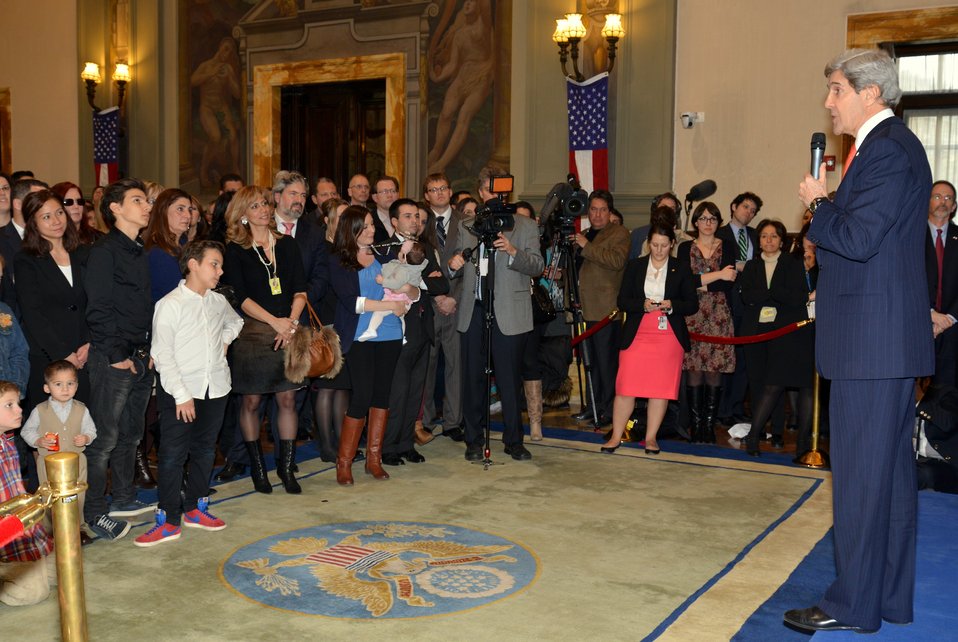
Secretary Kerry Speaks With Tri-Mission Rome Staff and Families

U.S. Secretary of State John Kerry speaks with staff and families of Tri-Mission Rome -- the U.S. Embassy in Rome, Italy; the U.S. Embassy to the Holy See; and the U.S. Mission to the UN Agencies -- in Rome, Italy, on February 28, 2013.